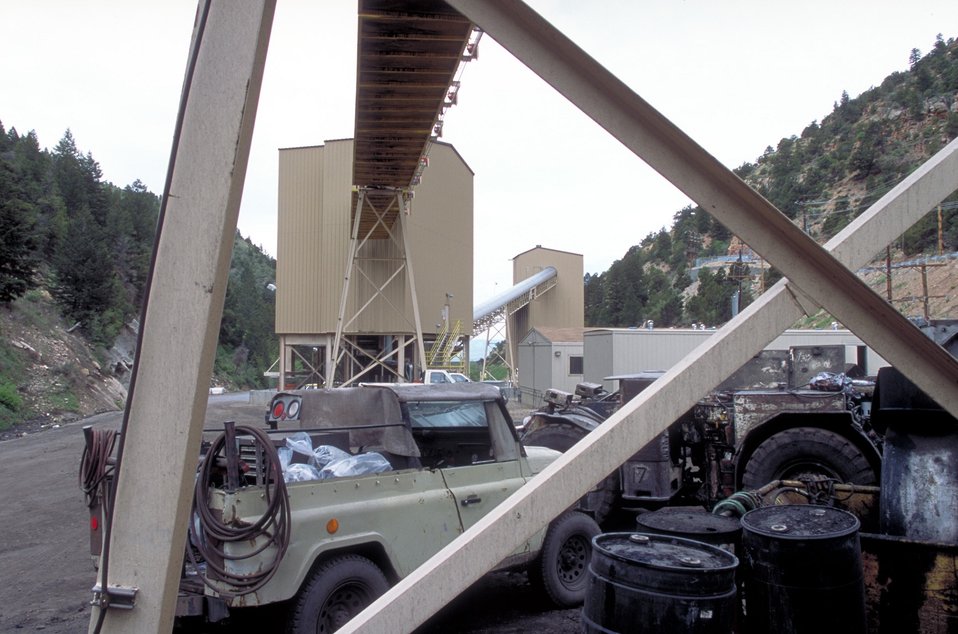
Coal production near Price, Utah.